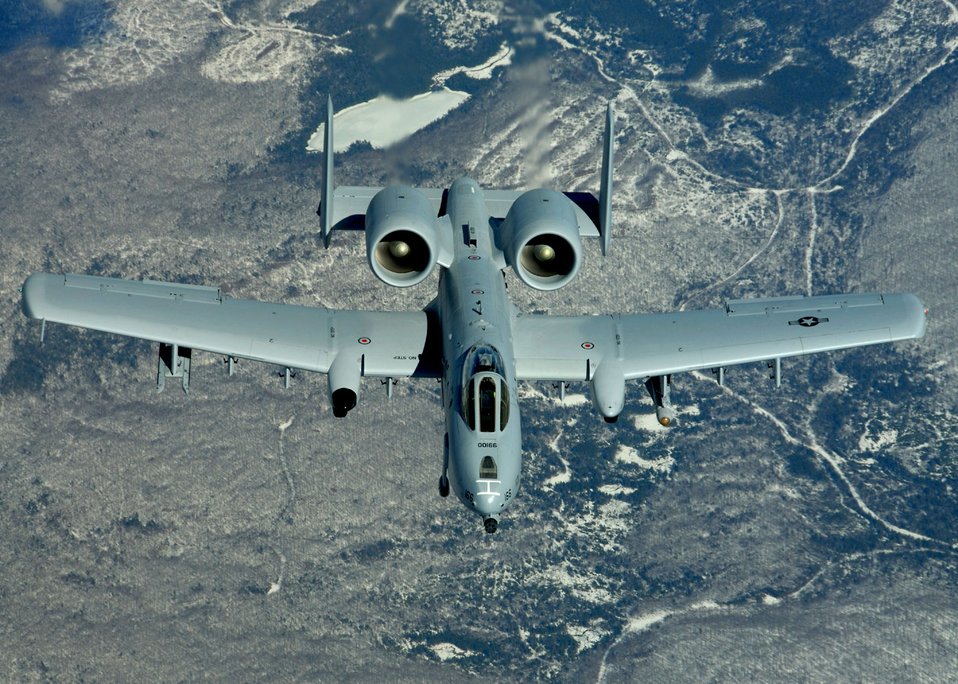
A long, long time in the air

Col. Jon Mott breaks the record for the most documented hours in an A-10 Thunderbolt II during a refueling mission March 30. Colonel Mott, with the Massachusetts Air National Guard's 104 Fighter Wing, has flown more than 4,570 hours in the A-10.